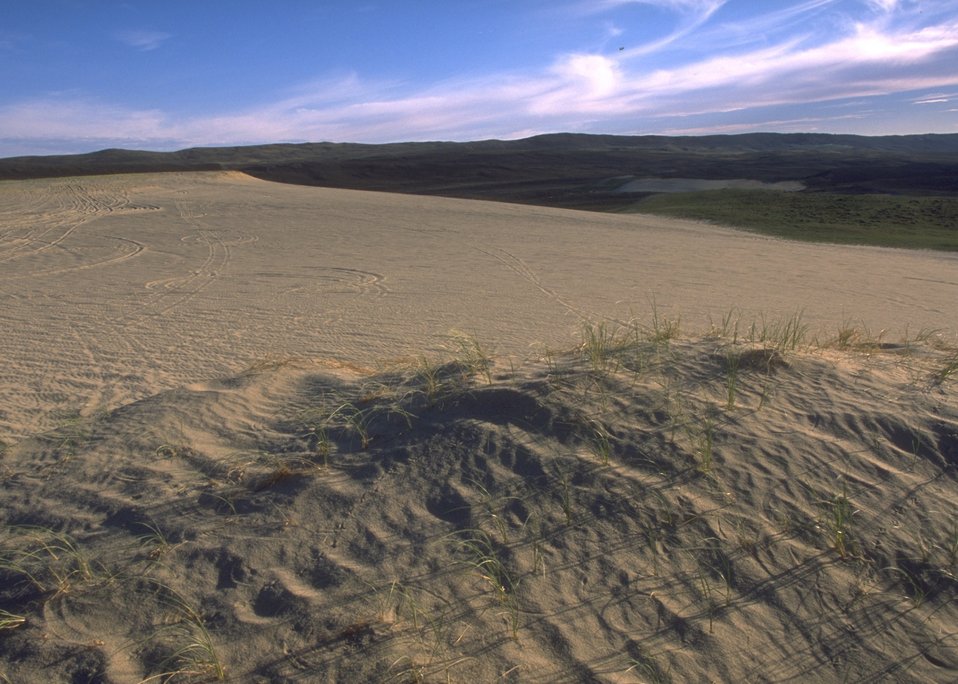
Sand dunes along the Alcova/Seminoe Back Country Byway, Rawlins Field Office.